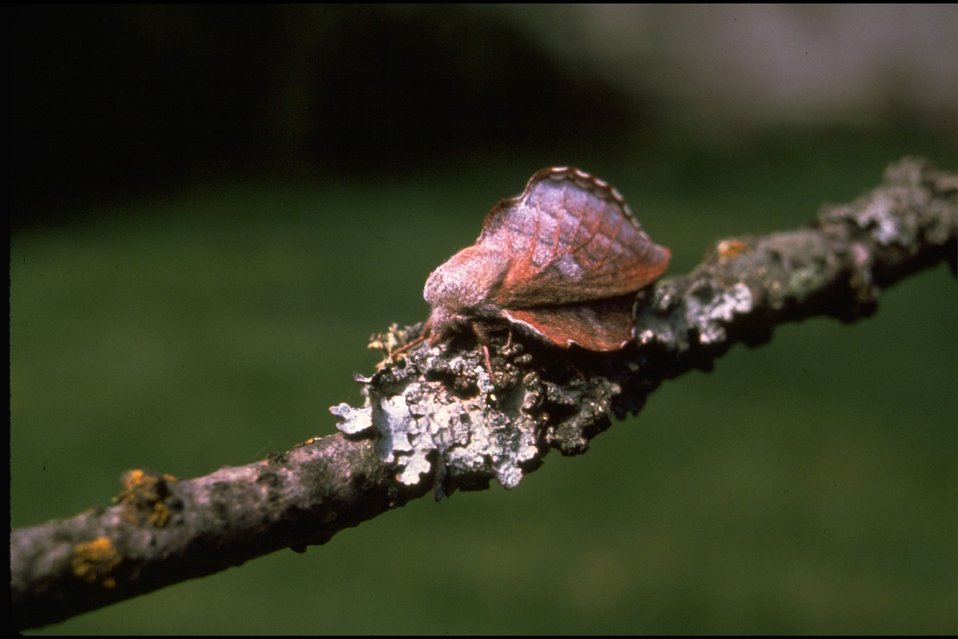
Rogue River - Moth.